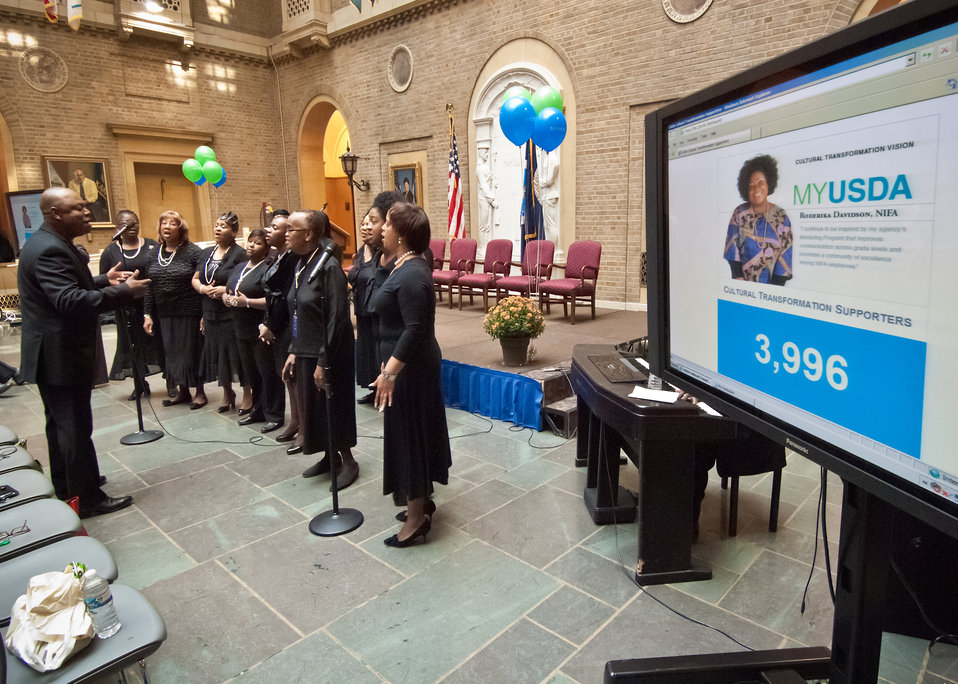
Arthur Bruce, Agricultural Marketing Service leads the Blacks in Government (BIG) Choir during the Cultural Transformation Recognition Ceremony on the patio of the Jamie Whitten, US Department of Agriculture in Washington, DC, on Tuesday, October 4, 2011. Cultural Transformation is the process of creating a workplace where all employees and customers are treated with dignity, respect and the opportunity for success. Recognizing the important contributions of all employees to the operation of the United States Department of Agriculture. The goal of cultural transformation is to get everyone at USDA – from the Under Secretaries to employees at every grade level, in every location - to ensure USDA is a place where there’s opportunity for all to reach their full potential. Only then can USDA provide its customers with exceptional service in an equitable manner.